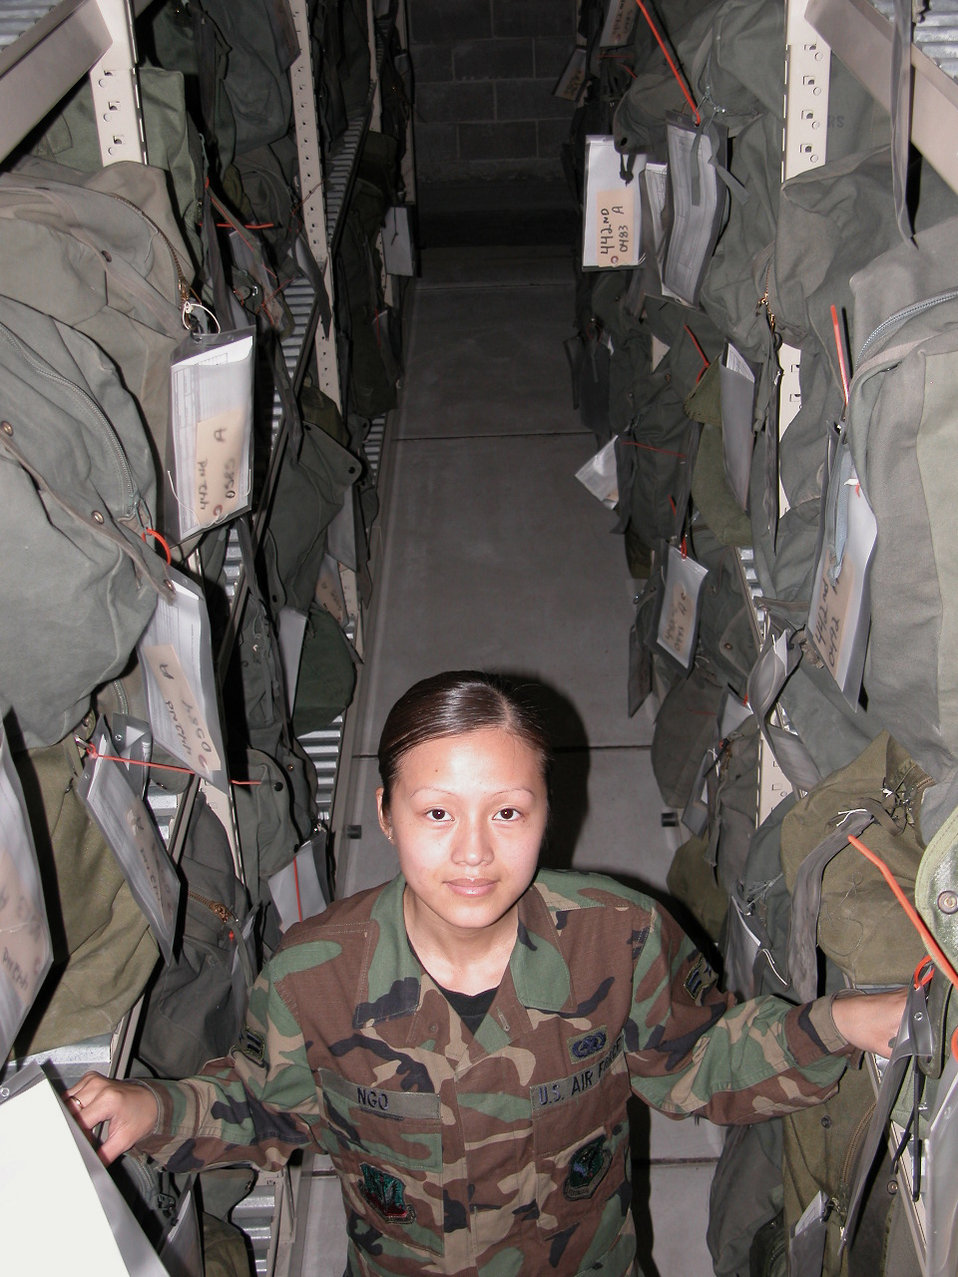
Airman inspired by father's service

WHITEMAN AIR FORCE BASE, Mo. -- Airman 1st Class Duong Ngo is the daughter of former South Vietnamese army Capt. Xe Ngo who served during the Vietnam War. She is assigned to the 509th Logistics Readiness Squadron here.